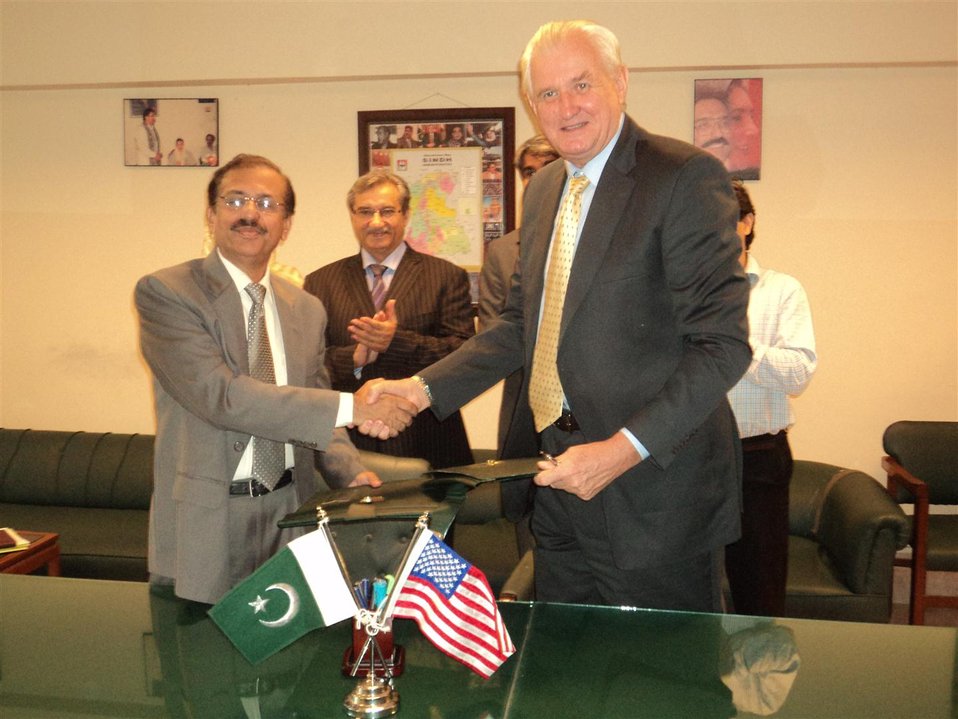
MoU between GoS and USAID

Karachi, September 4, 2012 - Deputy Mission Director, U.S. Agency for International Development (USAID), Edward Birgells, and Secretary of Education, Mukhtar Hussain Soomro, signed a Memorandum of Understanding (MOU) to repair and rehabilitate flood damaged schools in the four southern Sindh districts: Mirpurkhas, Sanghar, Umerkot and Tando Allahyar. The USAID’s $ 4 million commitment will assist in rehabilitation of selected public schools damaged in the 2011 floods in the four target districts.